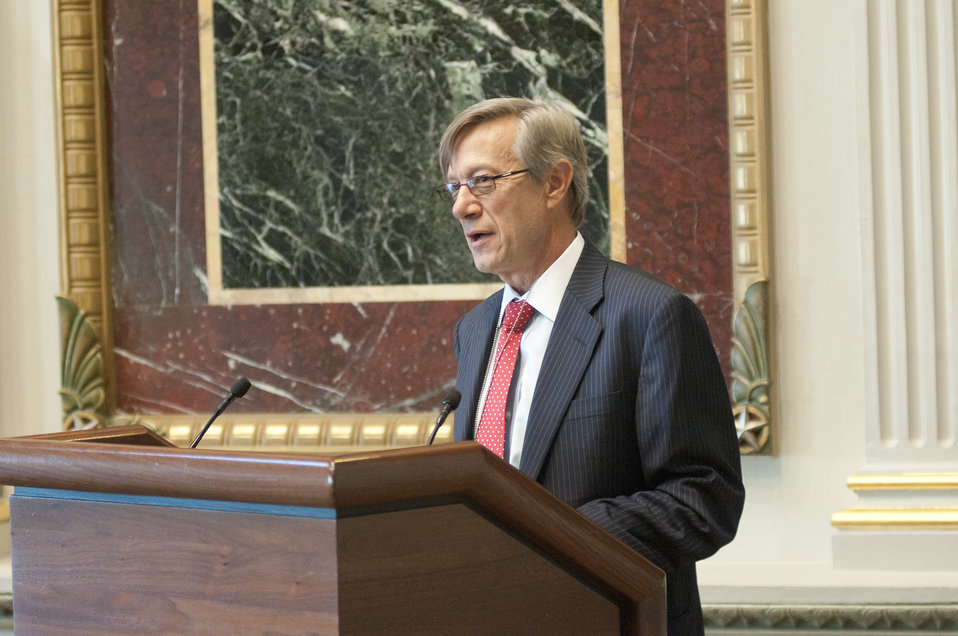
Appalachian Regional Commission Federal Co-Chairman Earl Gohl speaks at the 2nd Annual meeting of the White House Rural Forum concerning Regional Innovation at the Executive Office Building in Washington, D.C. on Wednesday, Sep. 18, 2013.